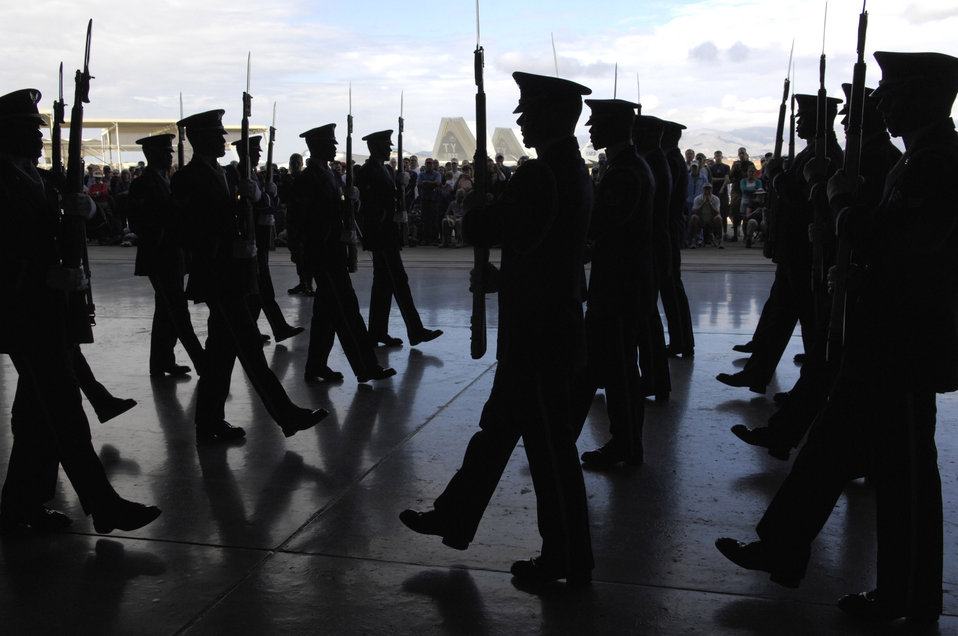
With honors

The United States Air Force Honor Guard Drill Team performs March 24 during the Luke Air Force Base, Ariz., air show. The drill team tours Air Force bases worldwide, showcasing the precision of today's Air Force to recruit, retain and inspire Airmen for the Air Force mission.